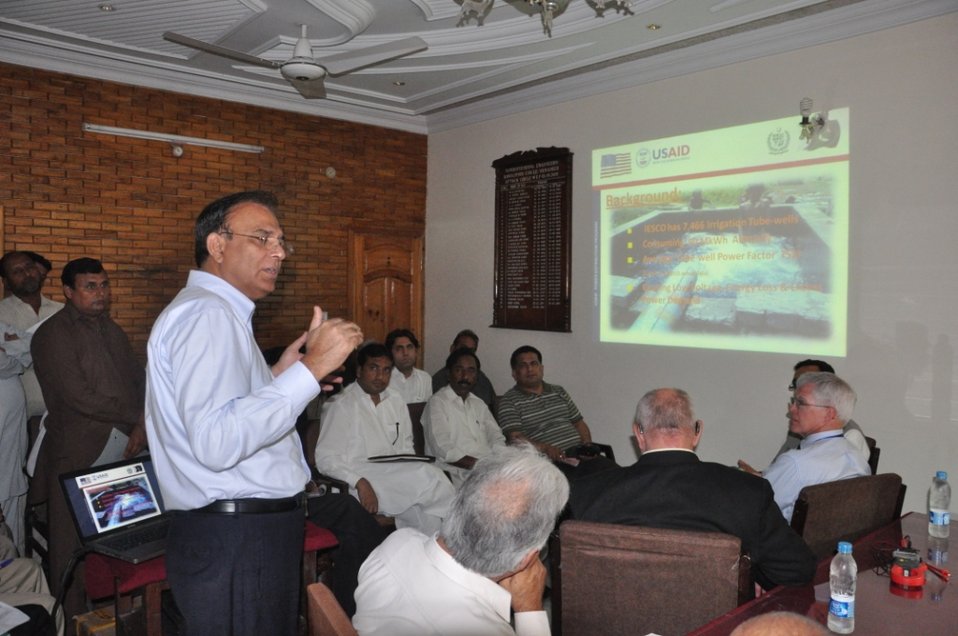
Usaid To Provide Technical Assistance To Improve Efficiency Of Tube-Wells In Iesco By Installing 2600 Lt Capacitors at Islamabad on April 26, 2012